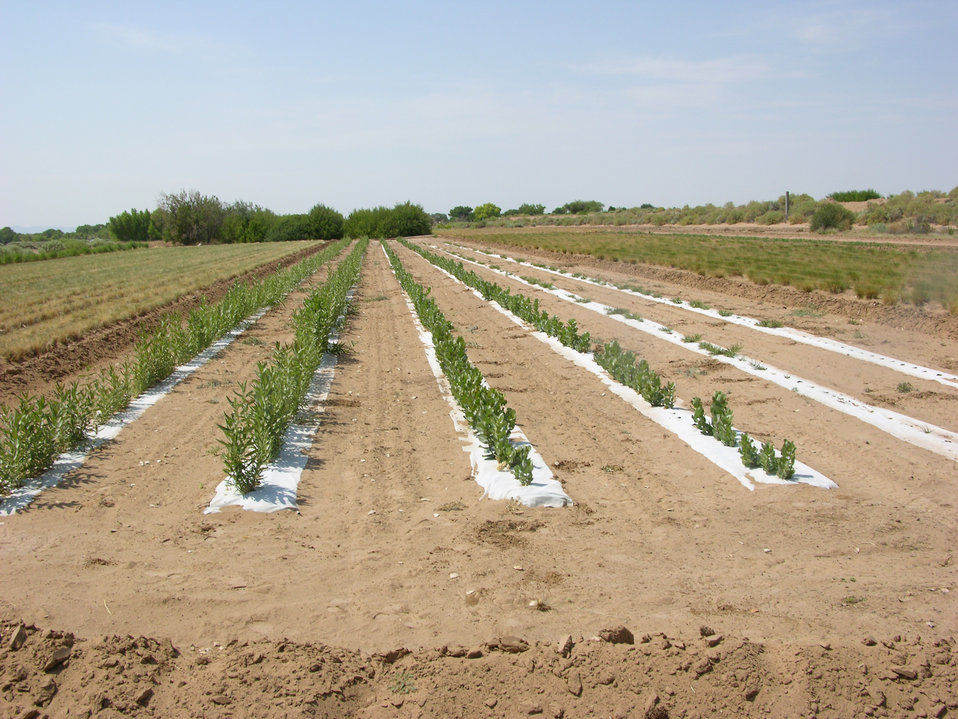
Rows

The U.S. Department of Agriculture's (USDA) Natural Resource Conservation Service (NRCS) Plant Materials Center in Las Lunas, NM produces milkweed seeds.